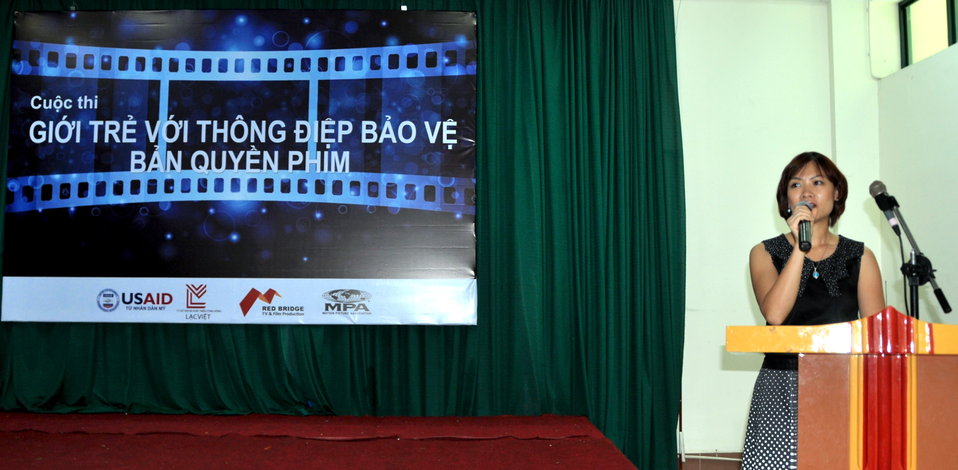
USAID supports scriptwriting contest for students in Hanoi to boost intellectual property rights awareness